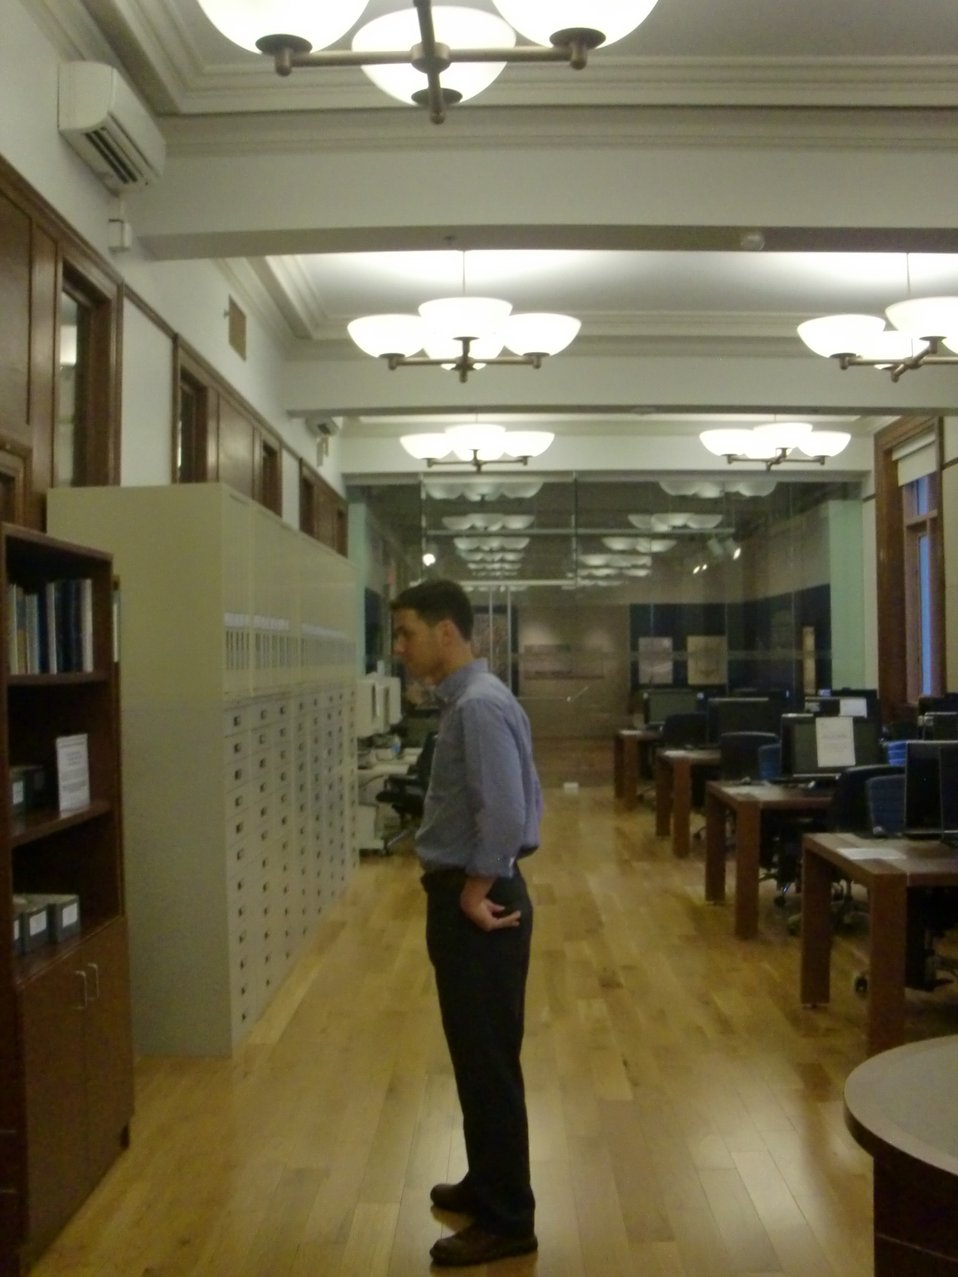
Research Room with Zack Wilske, guest speaker from USCIS; Location: National Archives at New York, New York, New York